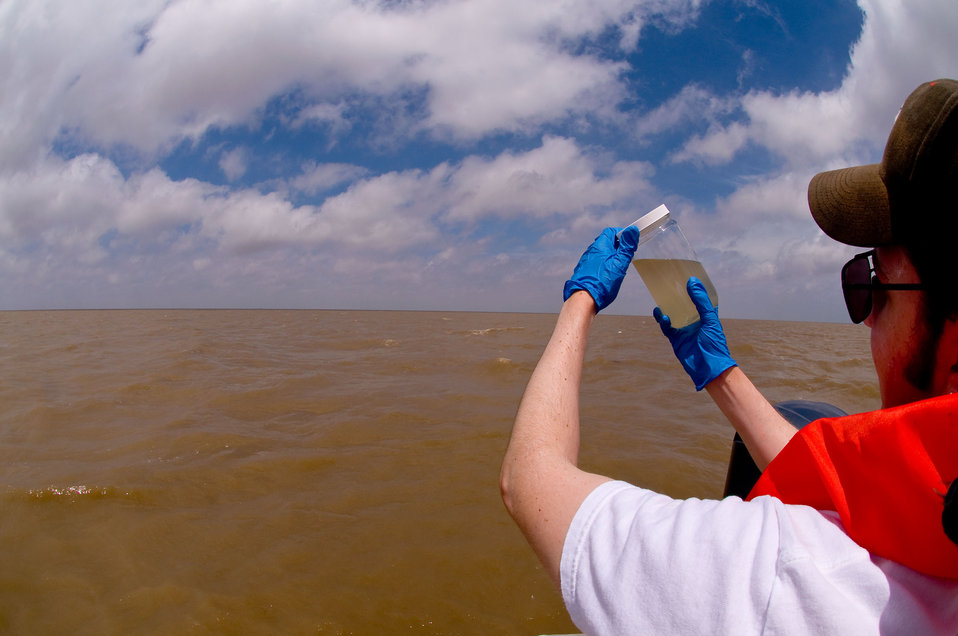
Murky water, checking turbidity.

May 12, 2010. Boats left Cocodrie, La. to sample the Gulf of Mexico. EPA contractor Jeff Bryniarski holds up a water sample, assessing the turbidity before the sample is analyzed for chemicals. EPA sampled the water first to determine 'baseline' conditions. Once we know what the water is typically like in a particular area, and what chemicals may already be present, EPA can better understand the effects from the oil spill.